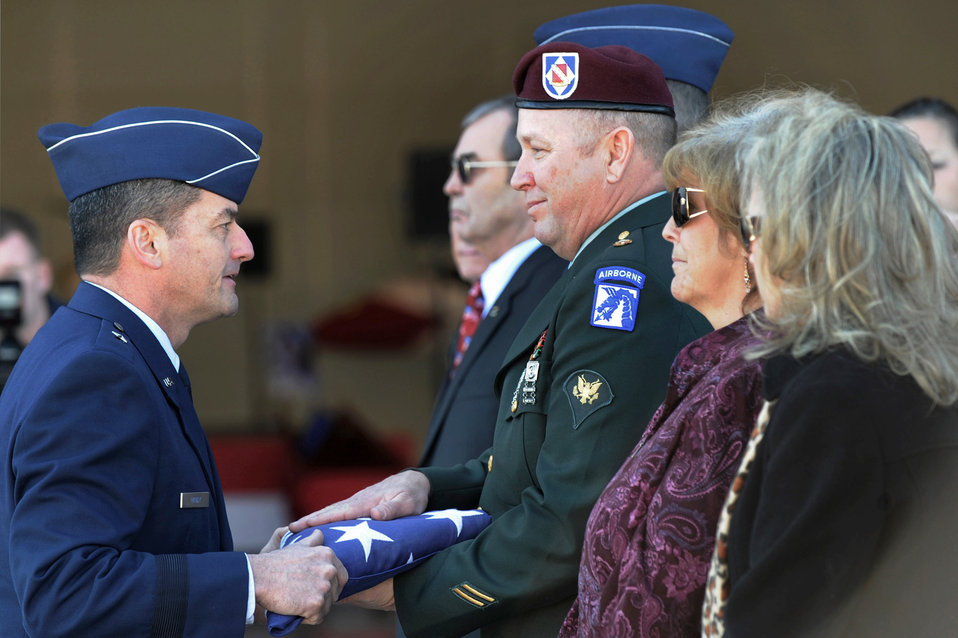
Thunderbird returns to Nellis for final farewell

Brig. Gen. Russell J. Handy presents former Army Spc. Russell Goodman, son of Maj. Russell C. Goodman, an American flag during the repatriation and funeral service for Major Goodman Jan. 14, 2010, at Nellis Air Force Base, Nev. Major Goodman served as the narrator for the Air Force Thunderbirds from 1964 to 1965 and was declared missing in action after his aircraft was hit by a surface-to-air missile in February 1967 while on a combat mission over North Vietnam. General Handy is the 57th Wing commander.